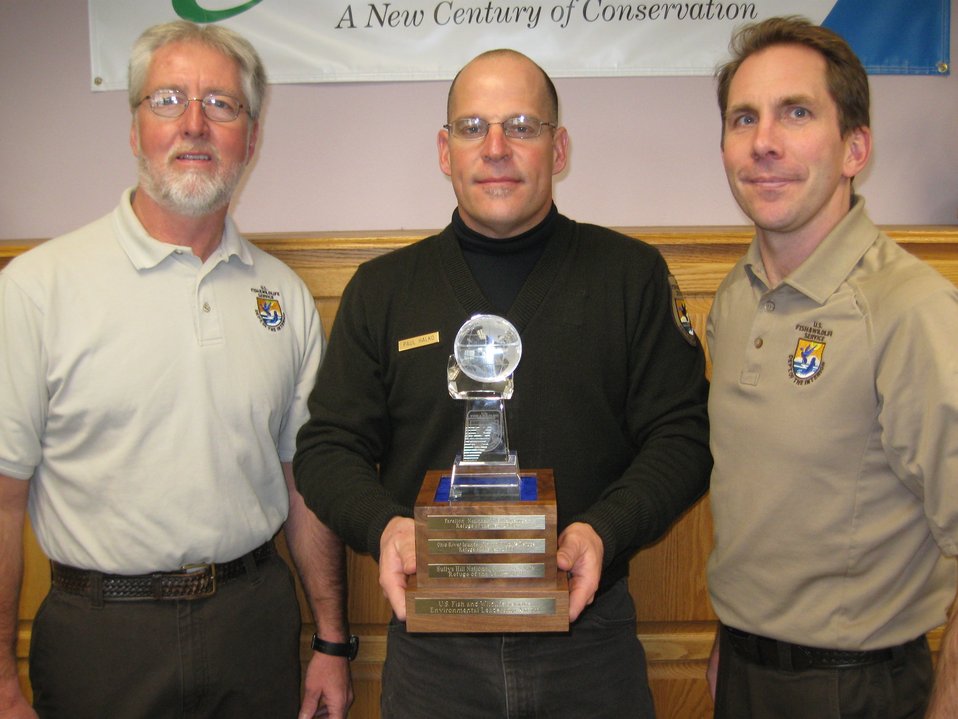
Sullys Hill Staff with Award

Sullys Hill National Game Preserve (NGP) received the Service’s 2010 Environmental Award for Refuge of the Year. They received this award because they innovatively advanced the “green” concept and significantly reduced their carbon footprint. Sully’s Hill National Game Preserve near Devil’s Lake, North Dakota is one of the refuges that installed geothermal systems with American Recovery and Reinvestment Act (ARRA) funds.

Sully’s Hill National Game Preserve was the first facility in the U.S. Fish and Wildlife Service Mountain-Prairie Region to complete a geothermal project. The visitor center geothermal system taps into air 200 feet below the ground and has an electrical backup. Work on the geothermal wells was finished in November 2009. The ARRA-funded system at Sully’s Hill NGP replaced an older, less efficient system.